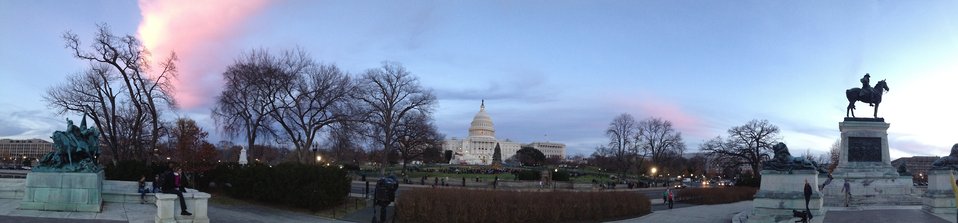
Panorama of U.S. Capitol Ellipse in Washington, D.C., shortly before the lights for the Capitol Christmas tree were turned on Tuesday, December 4, 2012.